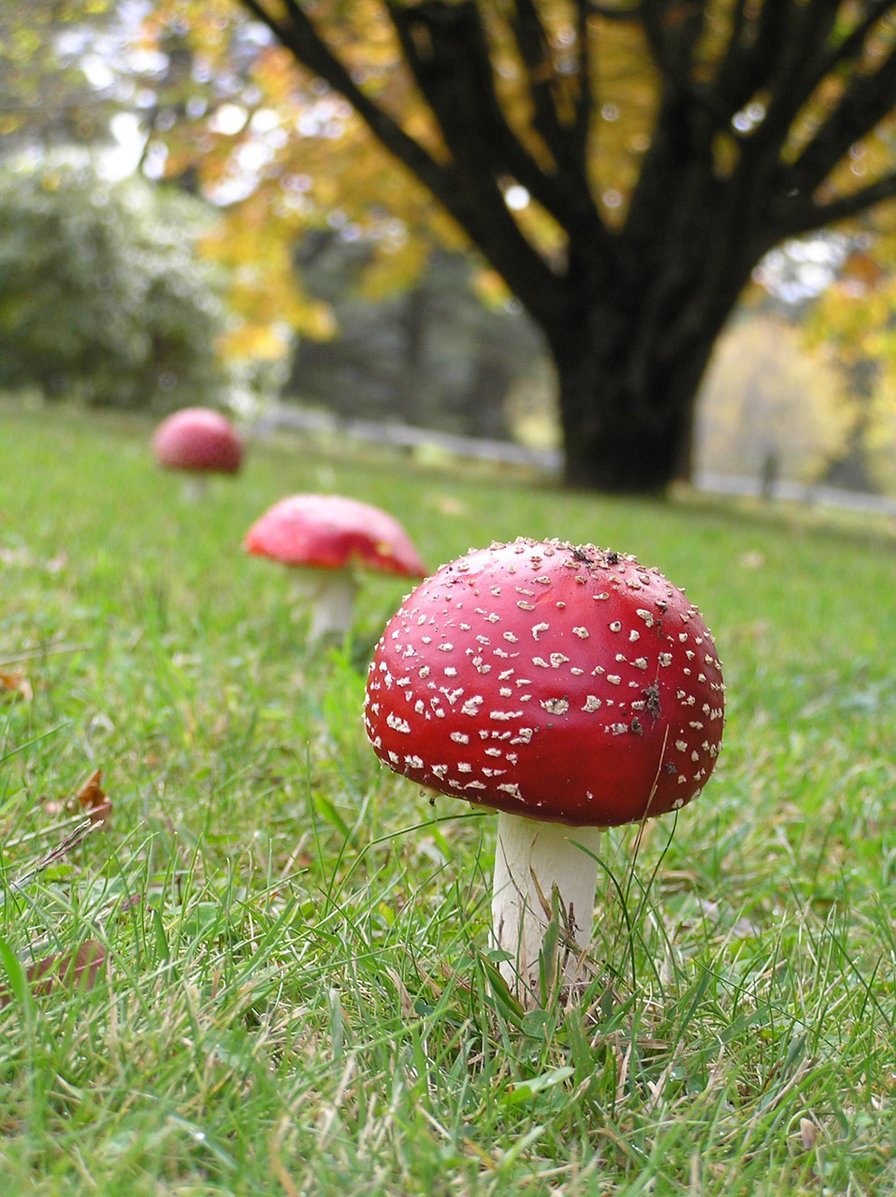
3 mushrooms growing.